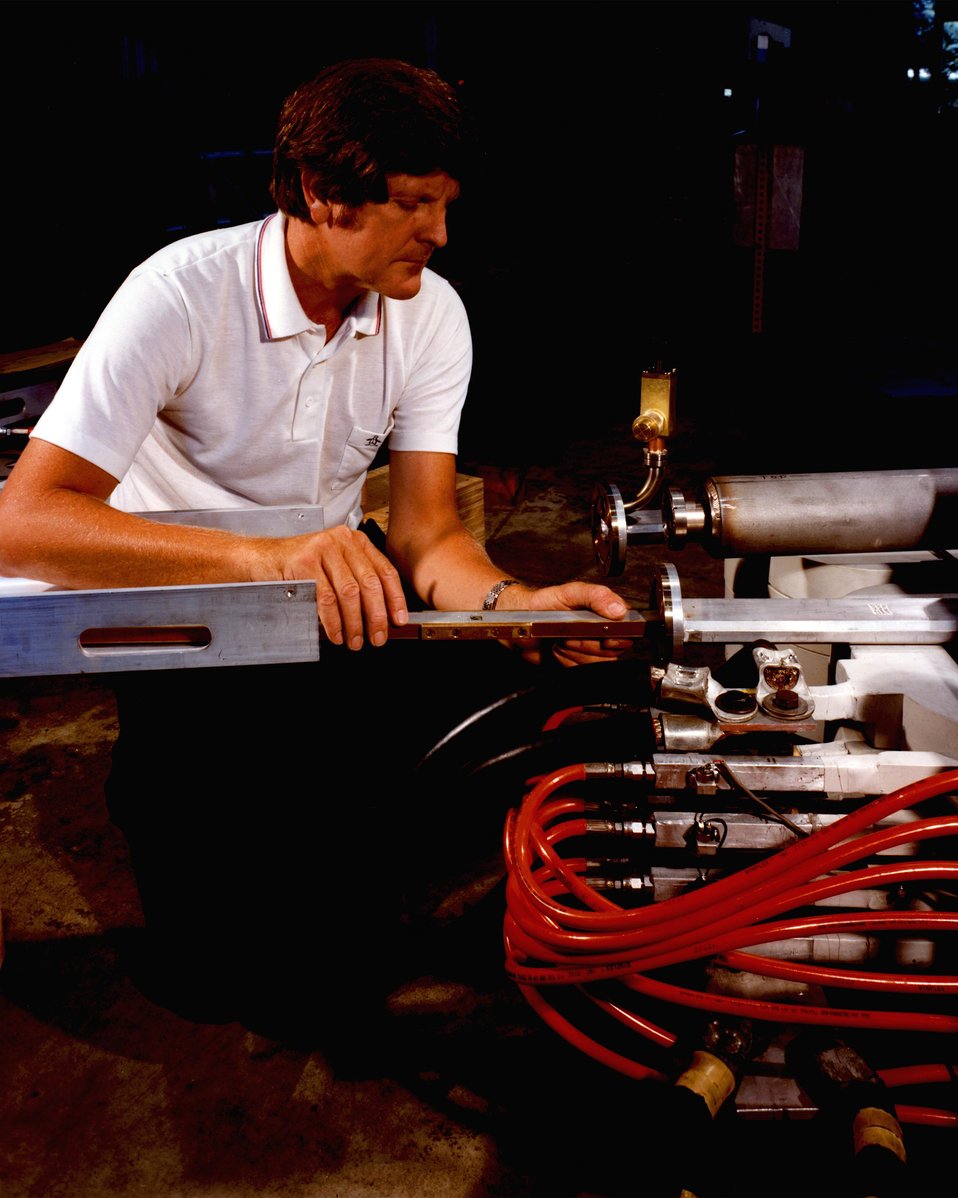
INSERTING THE MAGNET MEASURING COIL INTO THE GAP OF THE BENDING MAGNET.

THE POSITRON-ELECTRON PROJECT (PEP) IS A JOINT UNDERTAKING OF STANFORD LINEAR ACCELERATOR CENTER (SLAC) AND THE LAWRENCE BERKELEY LABORATORY (LBL). THE PEP MACHINE IS DESIGNED TO STORE BEAMS OF ELECTRONS AND POSITRONS CIRCULATING IN OPPOSITE DIRECTIONS AT SINGLE-BEAM ENERGIES BETWEEN 4 GEV AND 18 GEV. THE SOURCE OF THE BEAMS WILL BE THE PRESENT SLAC ACCELERATOR. THE COUNTER-ROTATING BEAMS OF ELECTRONS AND POSITRONS WILL COLLIDE WITH EACH OTHER AT SIX POINTS IN THE MACHINE. THESE COLLISION OR BEAM-INTERACTION POINTS WILL BE USED FOR HIGH-ENERGY PHYSICS EXPERIMENTS.